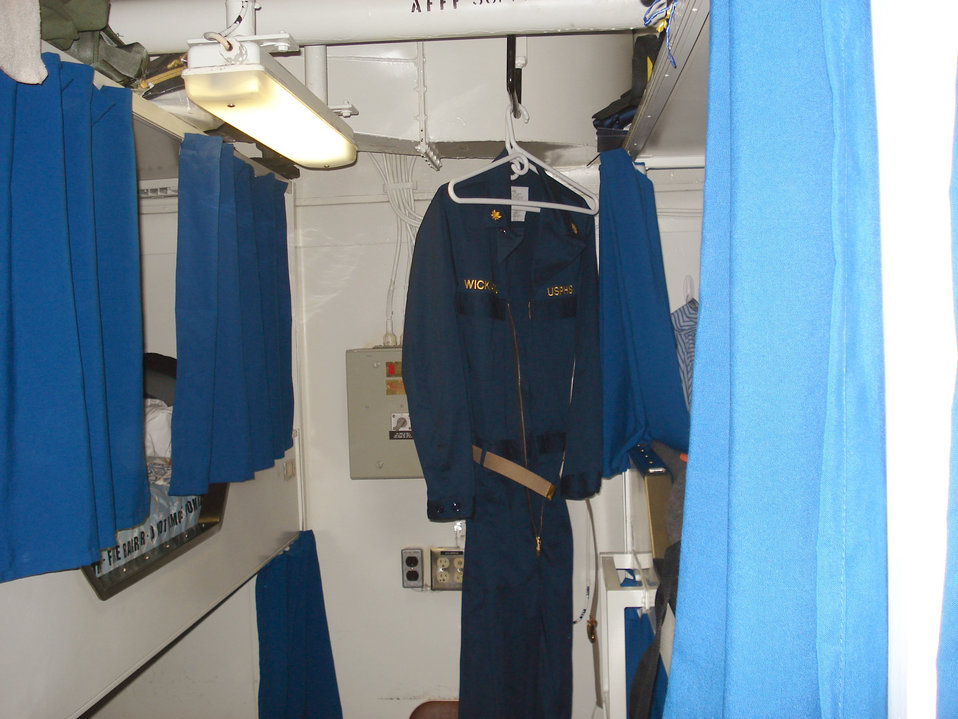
This photograph reveals some of the tight spaces of a 4-man cabin in the officer's berthing on the USS Kearsarge (LHD 3), an amphibious assault ship that was supporting the Caribbean phase of operation Continuing Promise 2008, an equal-partnership mission between the United States, Canada, the Netherlands, Brazil, Nicaragua, Panama, Colombia, Dominican Republic, Trinidad and Tobago and Guyana.